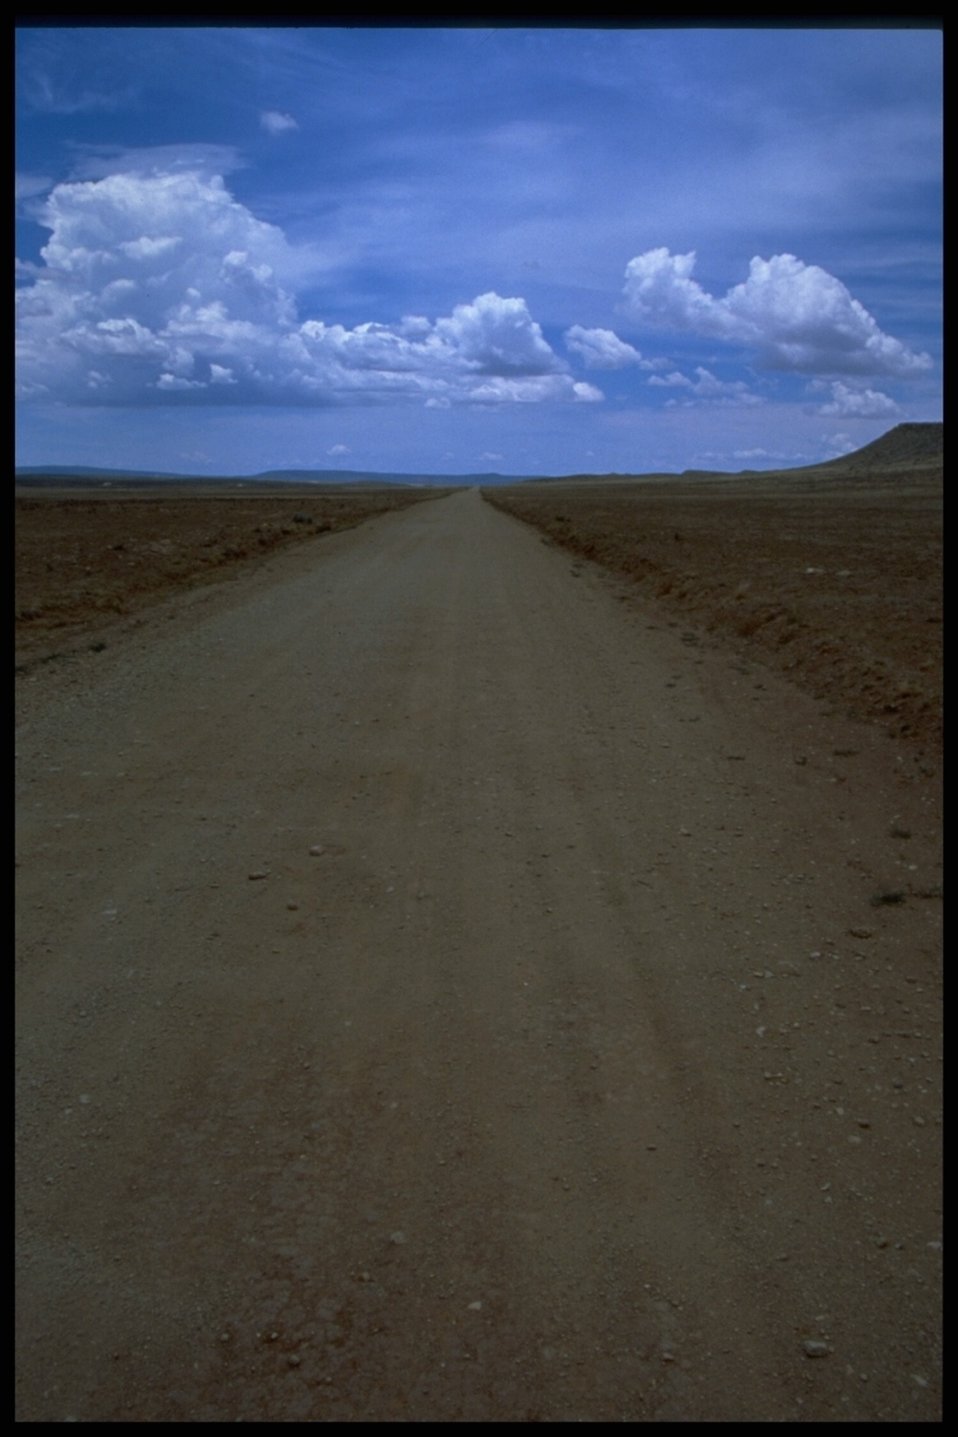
The open road disappears into the horizon as the blue sky touches the ground.